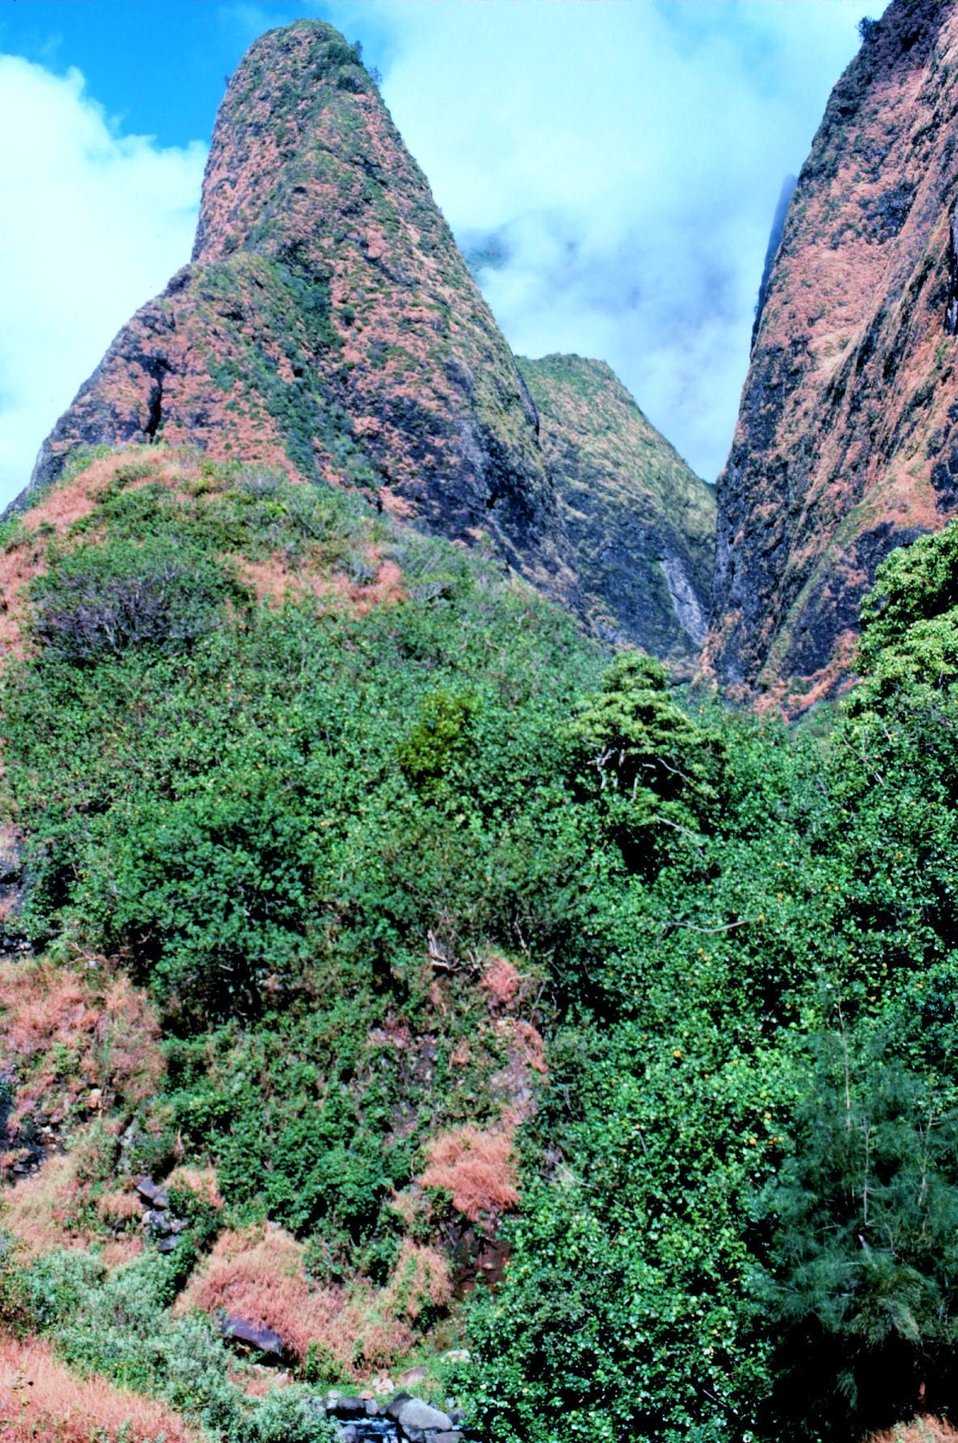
View of the Iao Needle in the West Maui Mountains